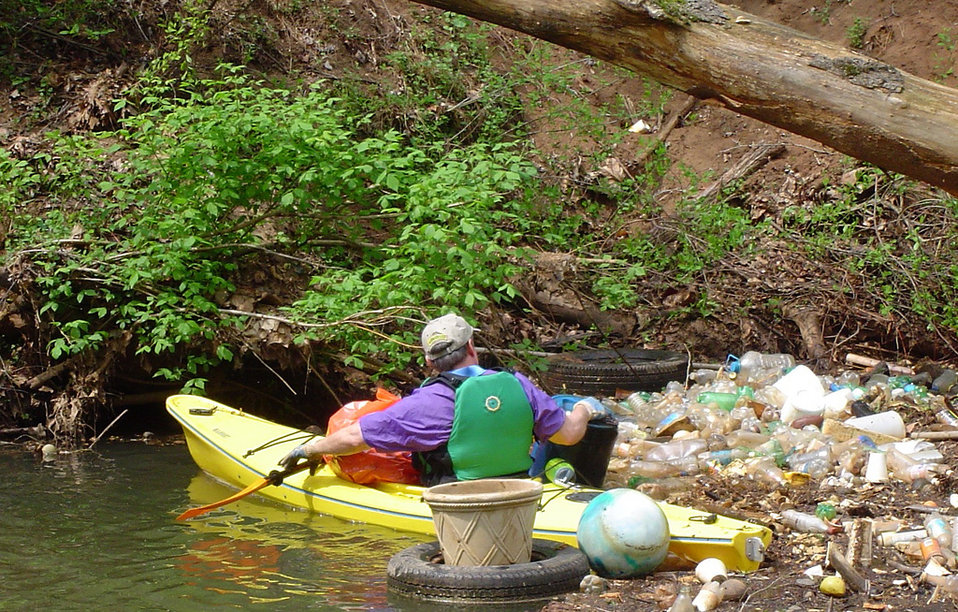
Earth Day stream clean-up 2006

Uploaded for Flickr member kellyhazlegrove.

VADEQ employee Alan Ball volunteering to clean trash from Blackwater Creek in Lynchburg Virginia on Earth Day 2006.